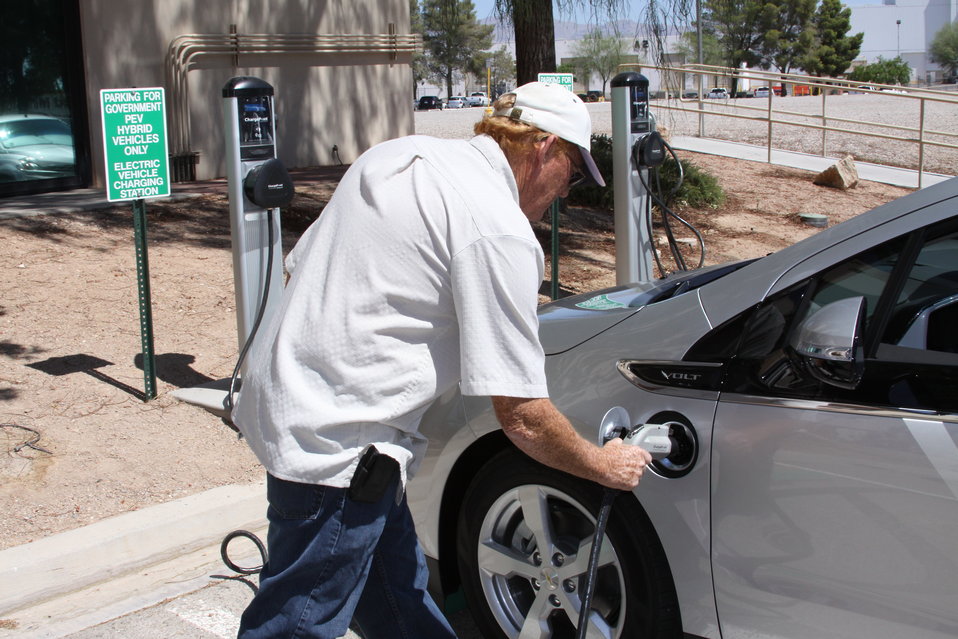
Superintendent of Light Fleet for NSTec, plugs in a new Chevy Volt at the company's recharging stations at its North Las Vegas Facility.
The new Chevy Volt is one of 11 being introduced into the NSTec Fleet as part of the pilot program by the General Services Administration to demonstrate plug-in electric technology for possible wider use in federal fleets.